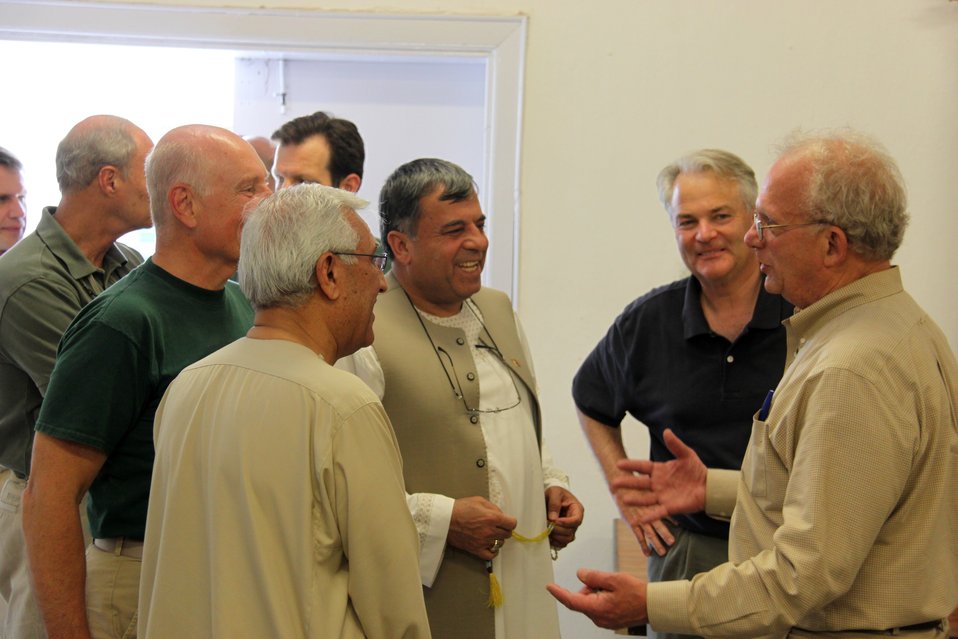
Meeting with Local Leaders in Kandahar